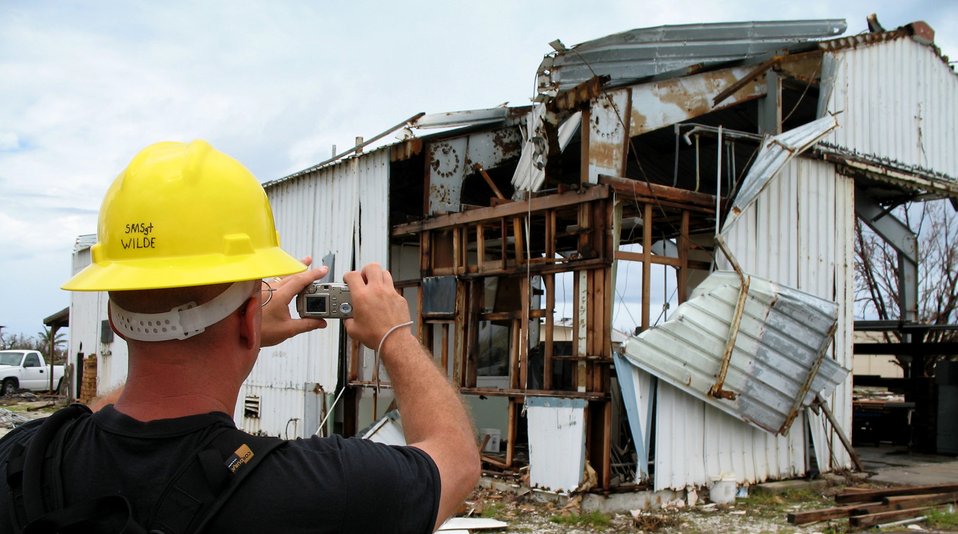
Assessing the damage

Senior Master Sgt. John Wilde snaps a photo of a damaged building for documentation at Wake Island Sept 15. Sergeant Wilde is part of a damage assessment team deployed to the atoll from the 15th Airlift Wing at Hickam Air Force Base, Hawaii. The team was sent to estimate the cost of repairs to the island after Super Typhoon Ioke touched down Aug 31.